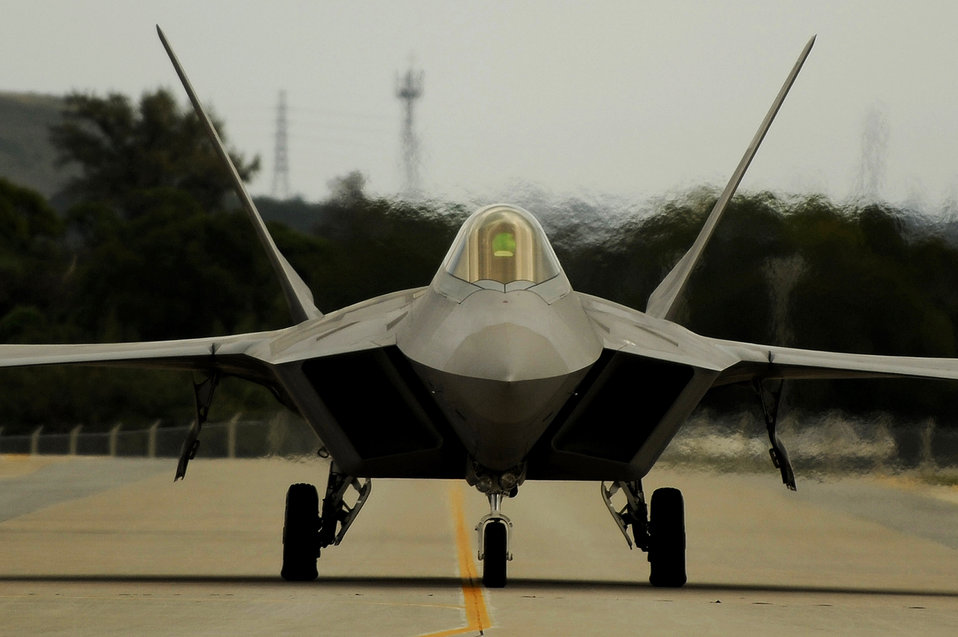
F-22s begin training in Japan

An F-22 Raptor taxies down the ramp for a mission Jan. 14 at Kadena Air Base, Japan. The F-22 is deployed from the 27th Fighter Squadron Langley Air Force Base, Va. in support of U.S. Pacific Command.